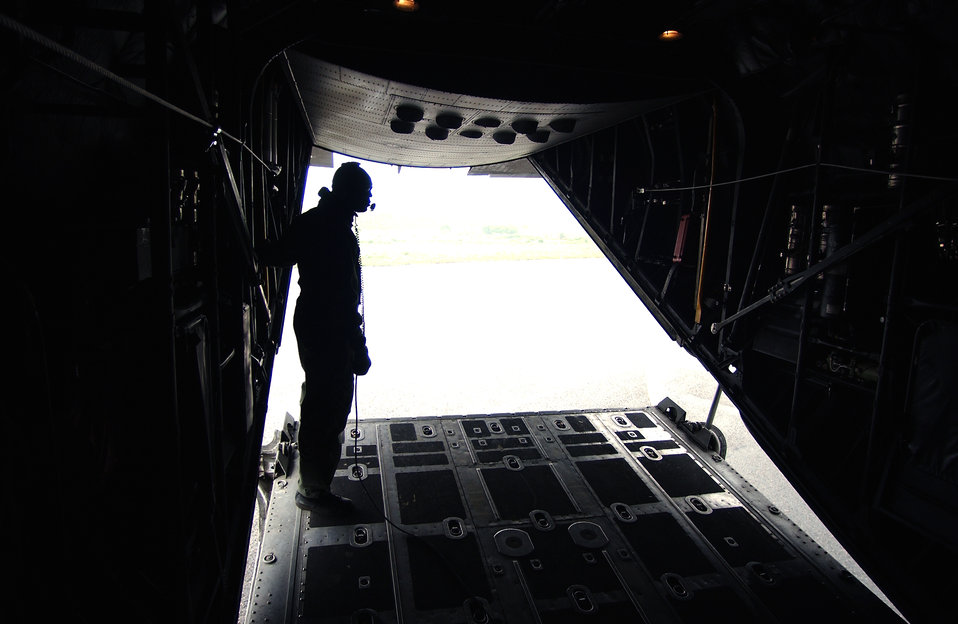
Light in the shadow

LUNGI, Sierra Leone -- Staff Sgt. Carlos Clements, a loadmaster on an MC-130P Combat Shadow, peers out the back upon landing after a refueling mission over Liberia on August 6th. Clements is deployed from Royal Air Force Mildenhall, England.